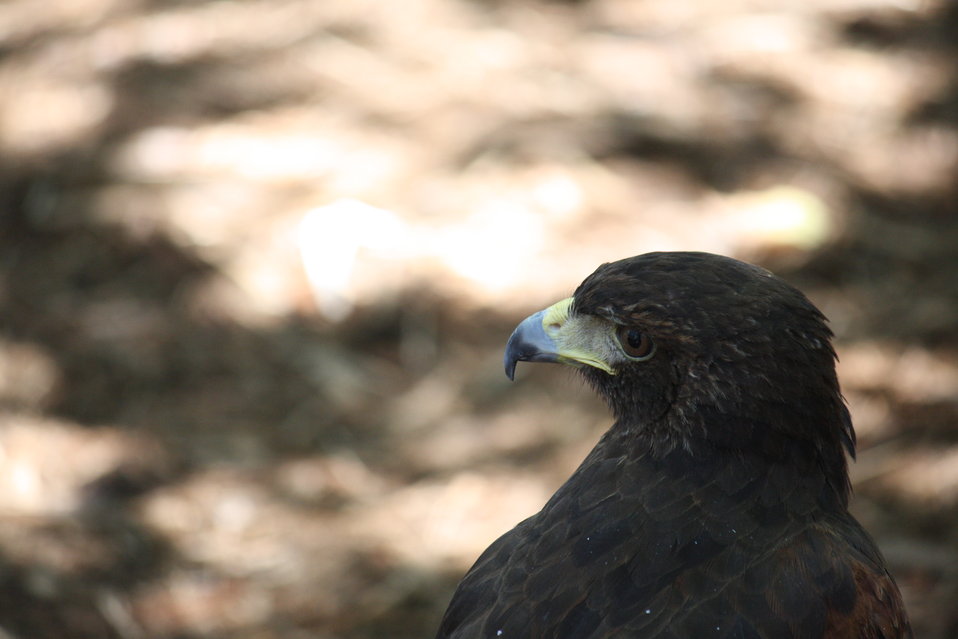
Boy Scout Jamboree 2010

Credit: Chris Poulin/ USFWS

Trained harris's hawk on the Conservation Trail.